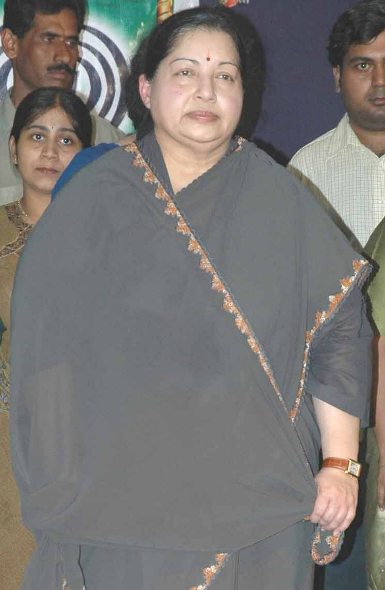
J. Jayalalithaa, the Chief Minister of Tamil Nadu, India, who is currently serving her third term in office (2011-2016). தமிழ்: தற்போதய தமிழக முதலமைச்சராக மூன்றாம் முறை பதவி வகிக்கும், செல்வி ஜெ. ஜெயலலிதா.